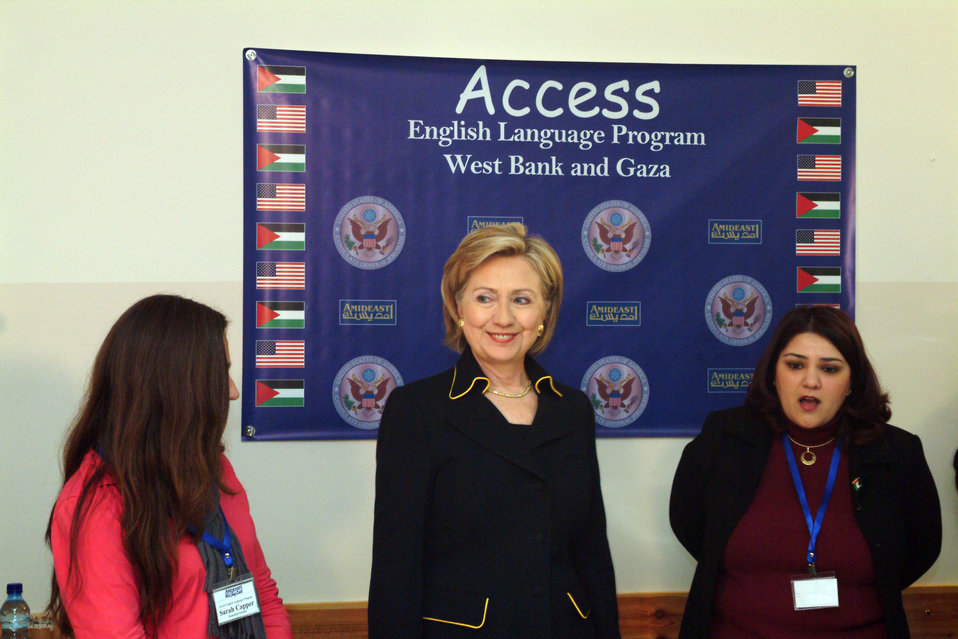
Secretary Clinton Attends Amideast Event

Secretary Clinton at an Amideast event in Ramallah March 4, 2009.